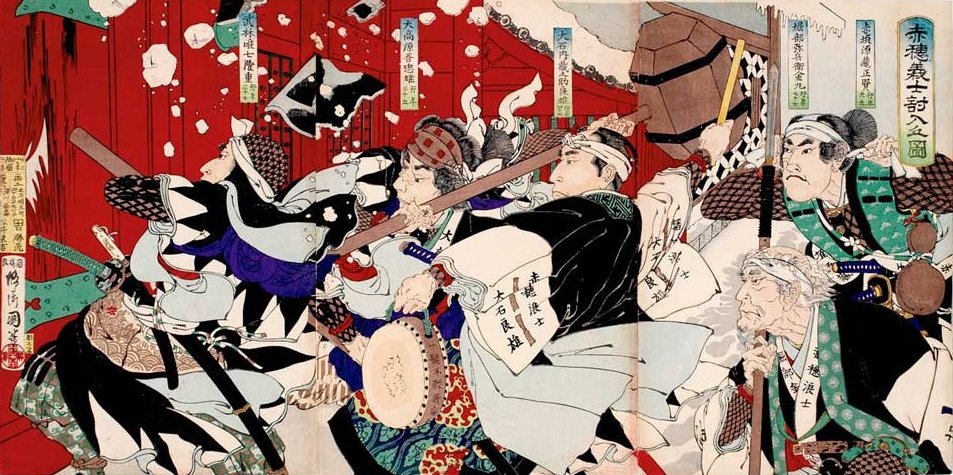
A View of Loyal Ako Samarui Breaking into Kira's Mansion, woodblock print triptych by Yamazaki Toshinobu II, 1886, Honolulu Museum of Art